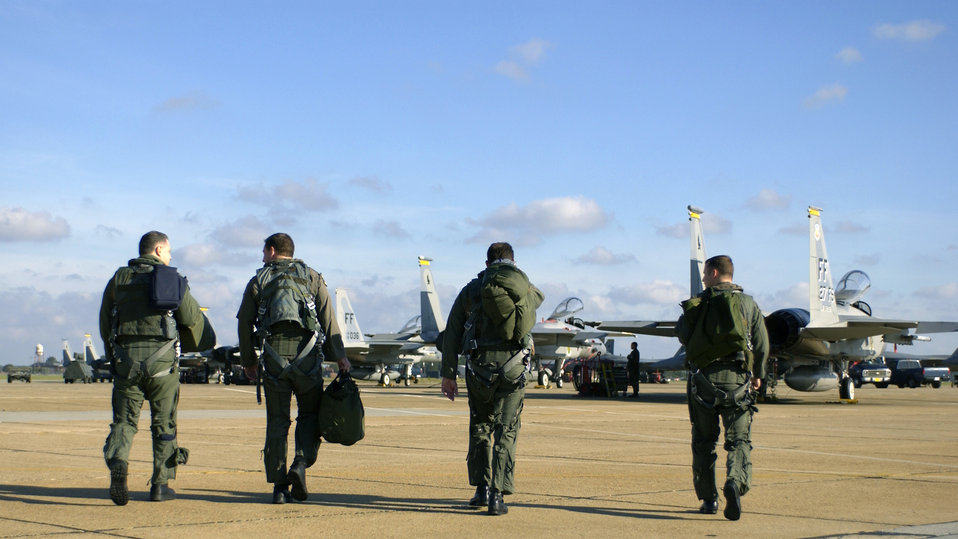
Eagles fly the nest

LANGLEY AIR FORCE BASE, Va. -- Pilots here step to their jets for the final flight of F-15 Eagles assigned to the 27th Fighter Squadron on Sept. 24. After Oct. 1, the squadron will officially begin the migration to become the first operational F/A-22 Raptor squadron by mid-2005. The pilots are (from left) Col. Thomas Tinsley, 1st Operations Group commander; Lt. Col. James Hecker, 27th FS operations officer; Lt. Col. Stuart Nichols, 27th FS commander; and 1st Lt. Michael Hiatt, a 27th FS pilot.